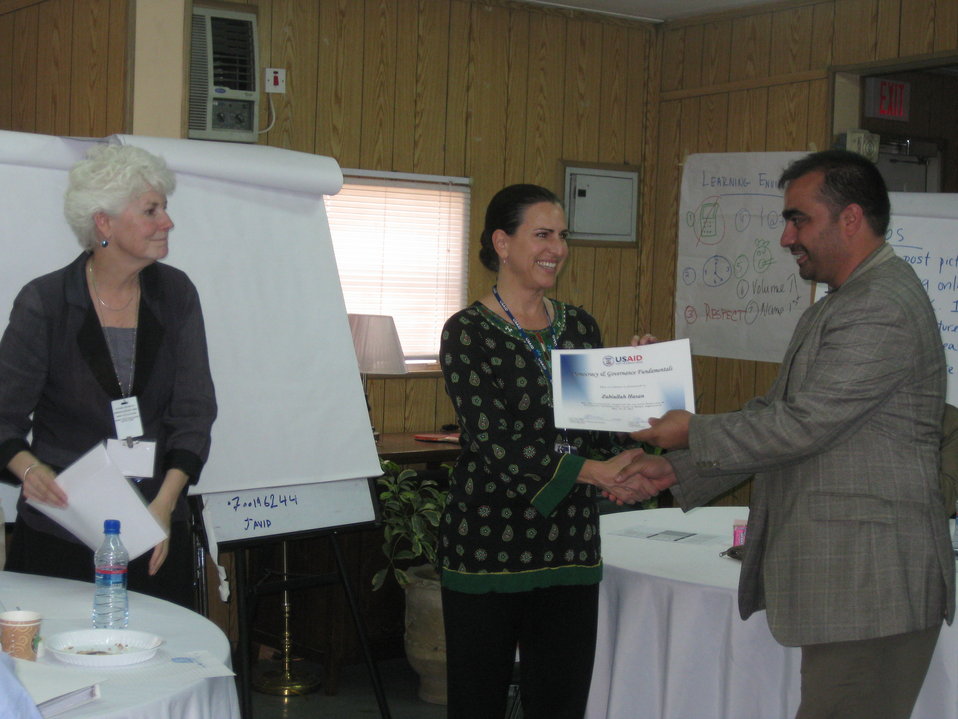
Afghan Youth Voices 071